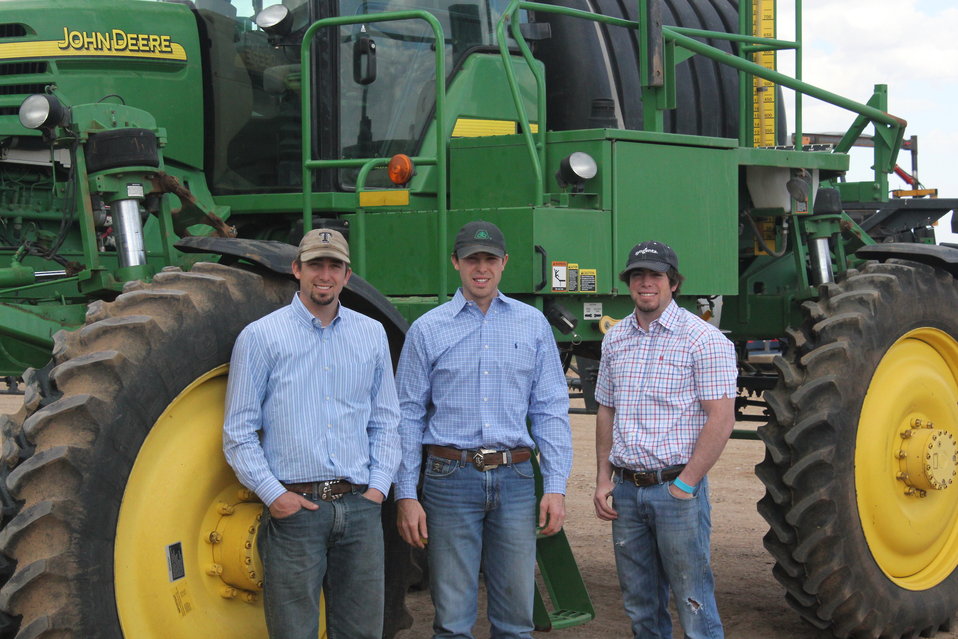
The Gruhlkey brothers – Brittan, 24, Braden 25, and Cameron 20 – worked with NRCS through the Ogallala Aquifer Initiative to adopt better equipment and techniques to manage their water use.